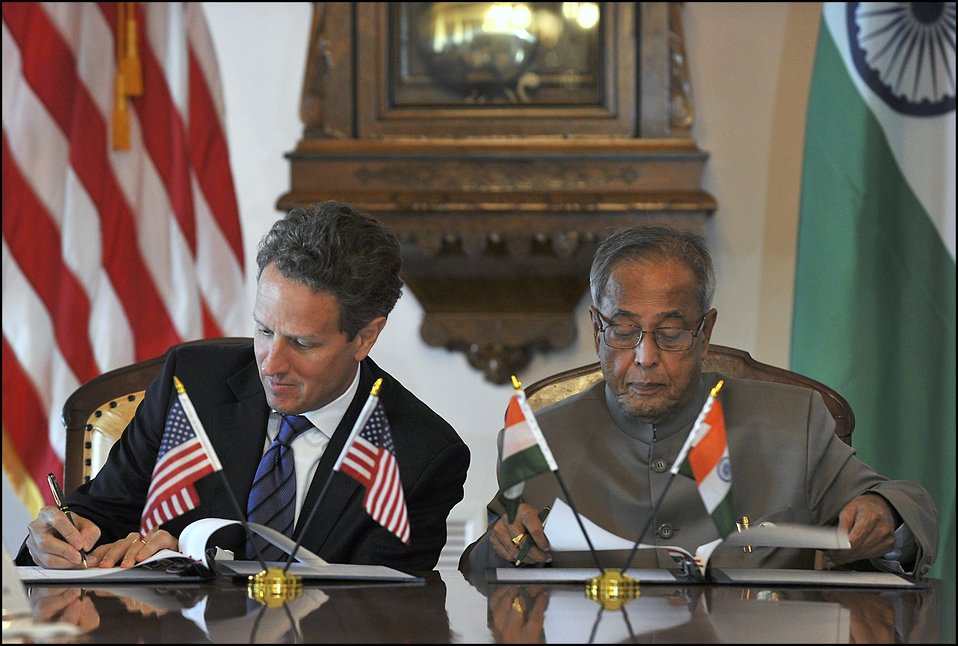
2011 U.S.-India Partnership

Secretary Geithner and Indian Finance Minister Pranab Mukherjee signed a joint statement at the conclusion of the U.S.-India Economic and Financial Partnership.